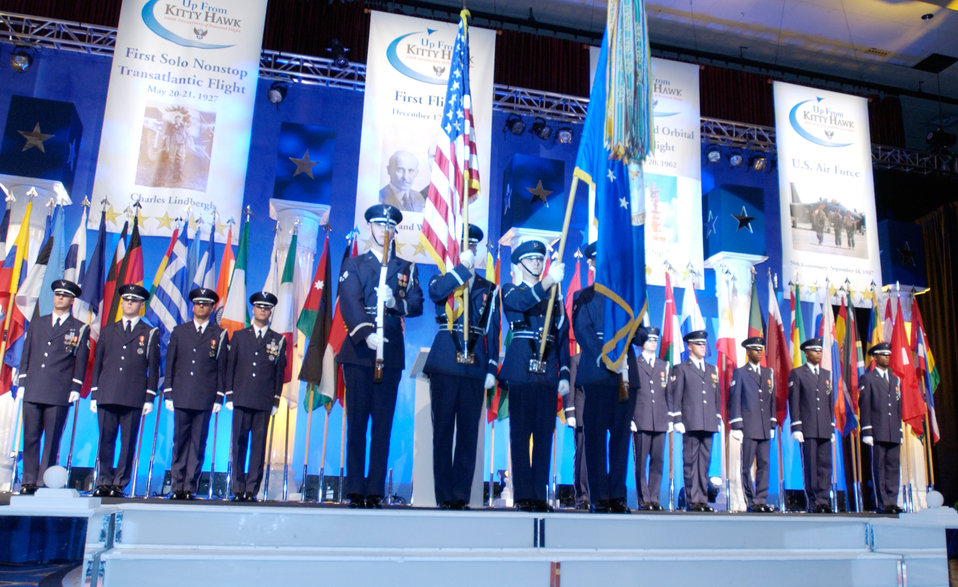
AFA Convention

WASHINGTON -- U.S. Air Force Honor Guard members post the colors during the opening ceremony of the Air Force Association's annual convention in Washington, D.C., on Sept. 15. In the audience were more than 90 international air chiefs attending the Global Air Chief's Conference which is running in conjunction with the convention.